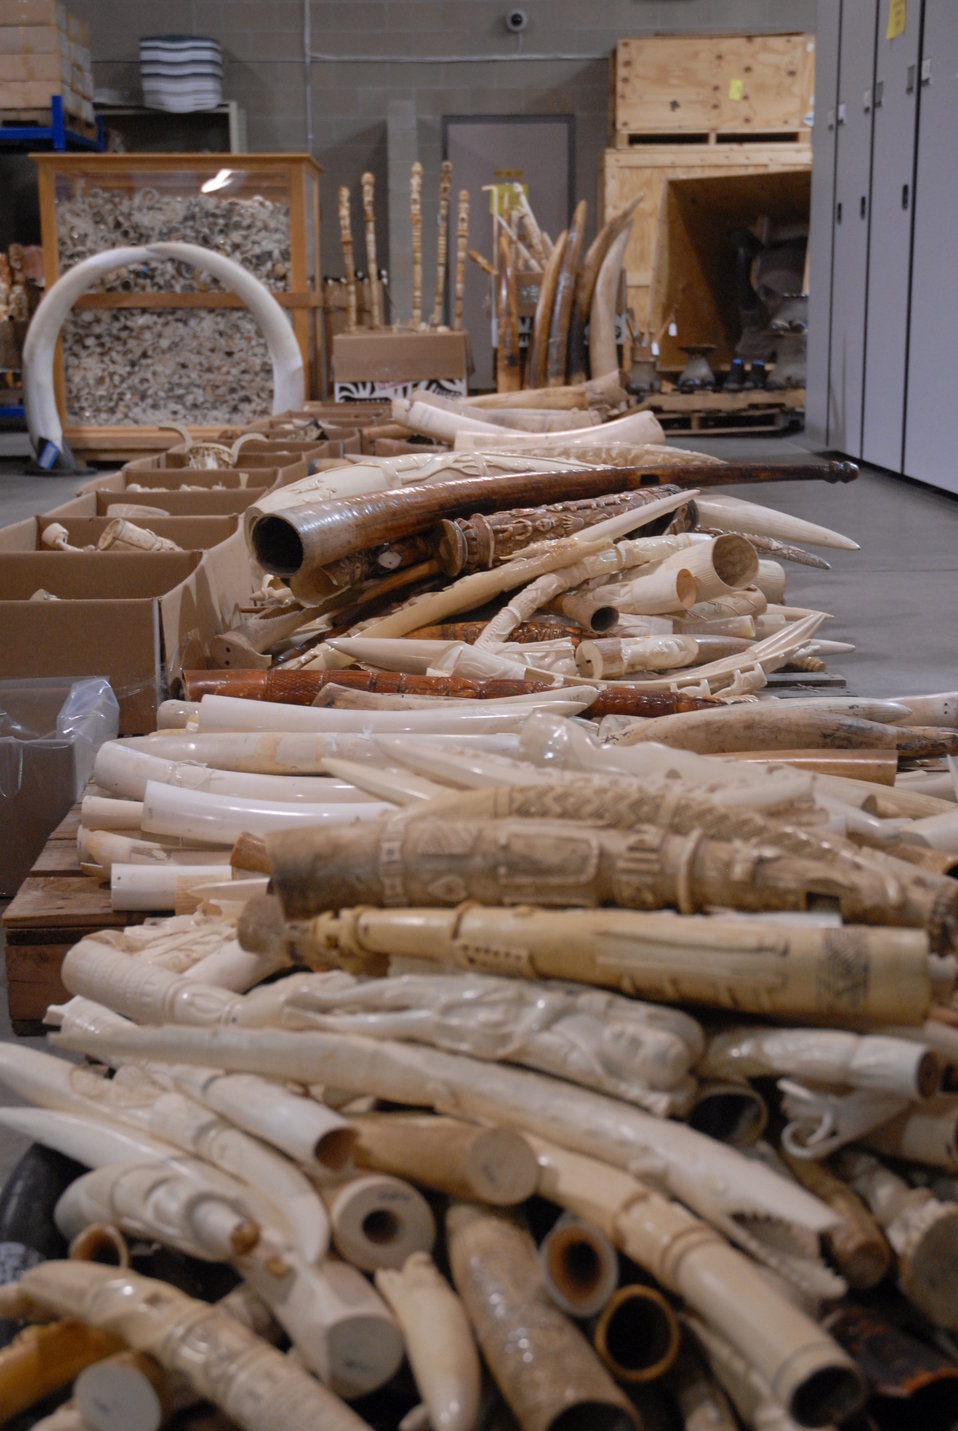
Carved ivory tusk stockpile slated for destruction in the crush.